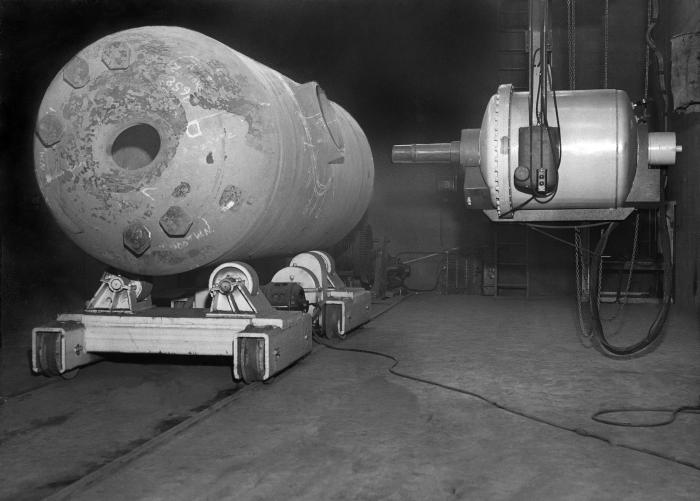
This historic image, published in the November, 1947 issue of 'Industrial Hygiene Newsletter', was provided by the Center for Disease Control's (CDC), National Institute for Occupational Safety and Health (NIOSH), and depicted a 1000 kV X-ray machine that was being positioned adjacent to a metal boiler, in order to perform a radiographic analysis of a boiler weld. A radiographic plate would be positioned behind the boiler, which would be exposed when the x-rays passed through the boiler's metal construct, thereby, highlighting the 'health' of the metallic weld site. Even today, radiographic analyses are still performed in order to reveal the presence of stress fractures in dense materials such as metals and concrete.